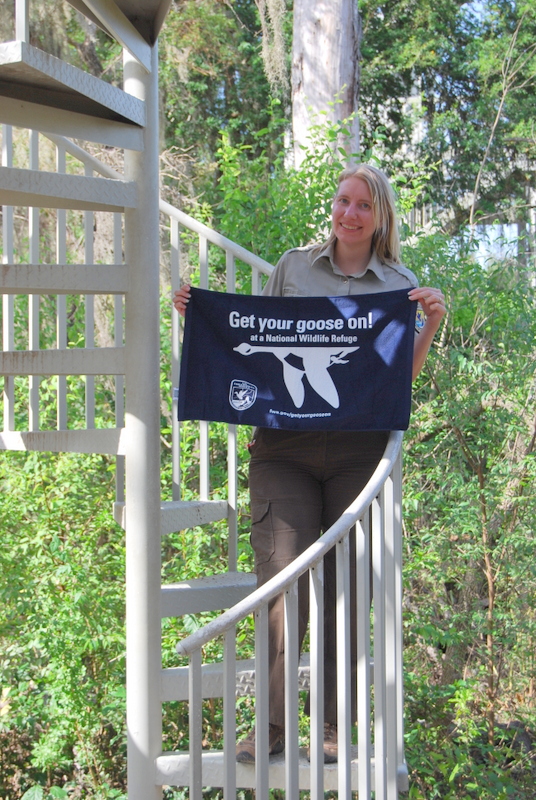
Get Your Goose On!

Santa Ana National Wildlife Refuge manager on the canopy walk staircase.